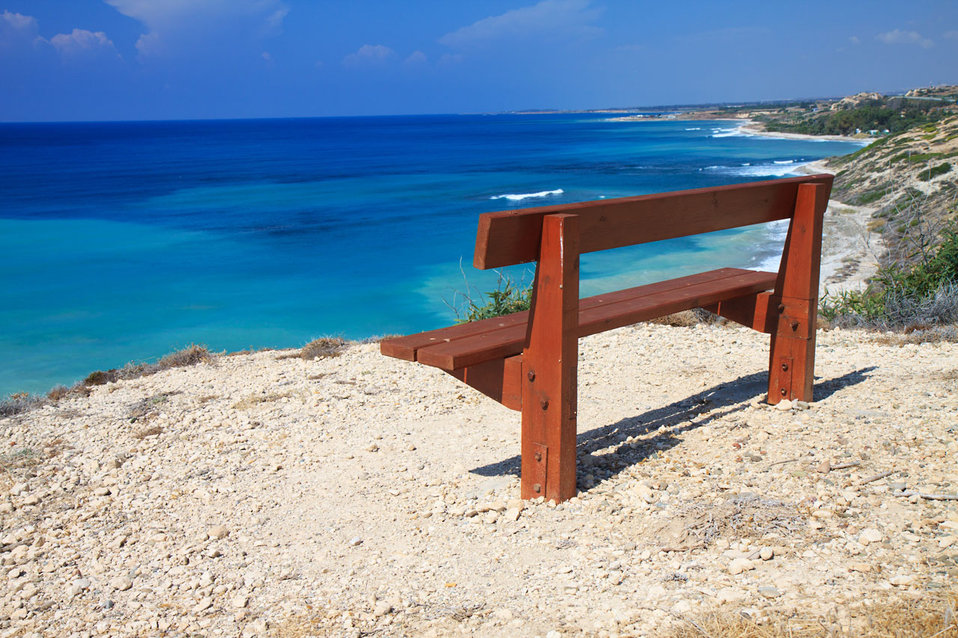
Beautiful sea view

Bench on coast with a beautiful sea view in cyprus.